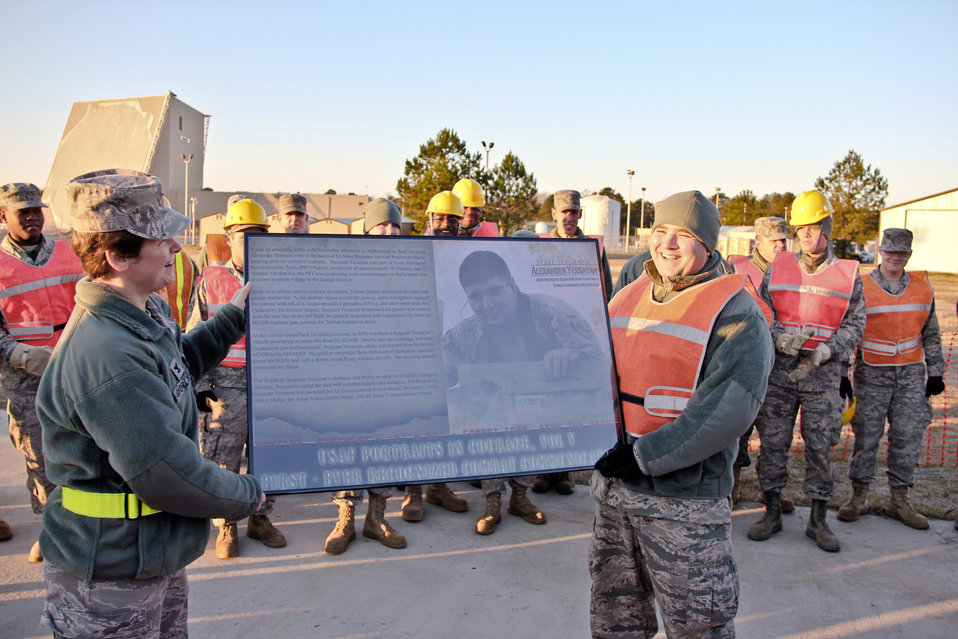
Staff Sgt. Alexander Yessayan

Col. Theresa Giorlando surprises Staff Sgt. Alexander Yessayan with a plaque Dec. 6, 2010, at Robins Air Force Base, Ga. The plaque includes the pages dedicated to him for being included in the